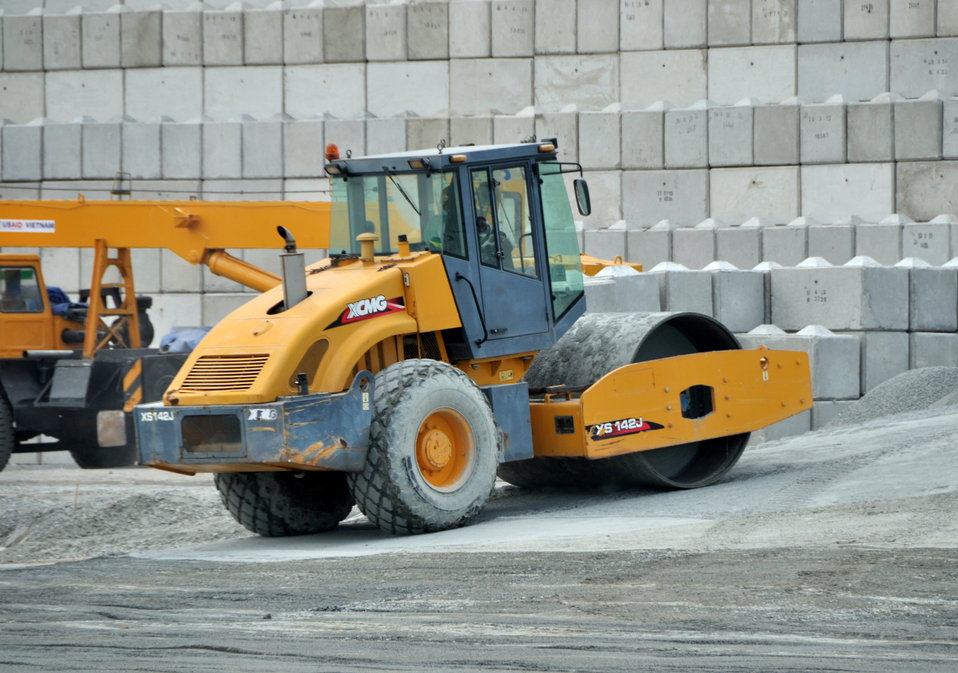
Site construction at the Environmental Remediation of Dioxin Contamination at Danang Airport

Progress at the Danang Airport remediation site
April 23, 2013